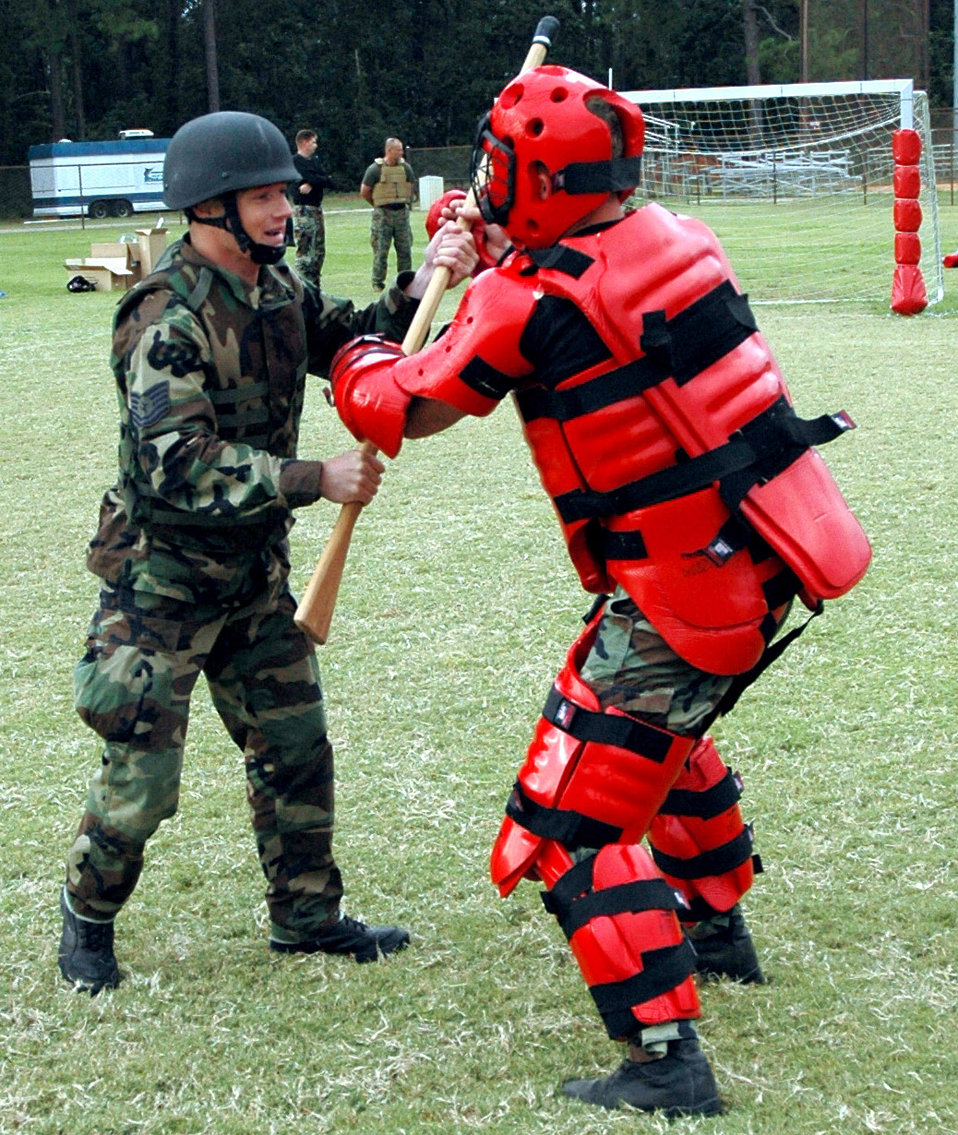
Air commandos learn martial arts from Marines

HURLBURT FIELD, Fla. -- An air commando struggles to maintain control of his weapon as his attacker (right) attempts to wrench it from his grasp. The instruction emhasizes staying out of an attacker's reach so he cannot grasp a personal weapon.